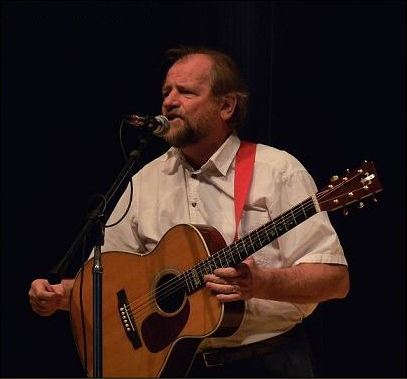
This digital photo of Ed Miller was taken July 24, 2009 in Cole Memorial Auditorium on the Edinboro University campus in Edinboro, Pennsylvania. Ed Miller is well known for his outstanding voice and acoustic guitar playing.